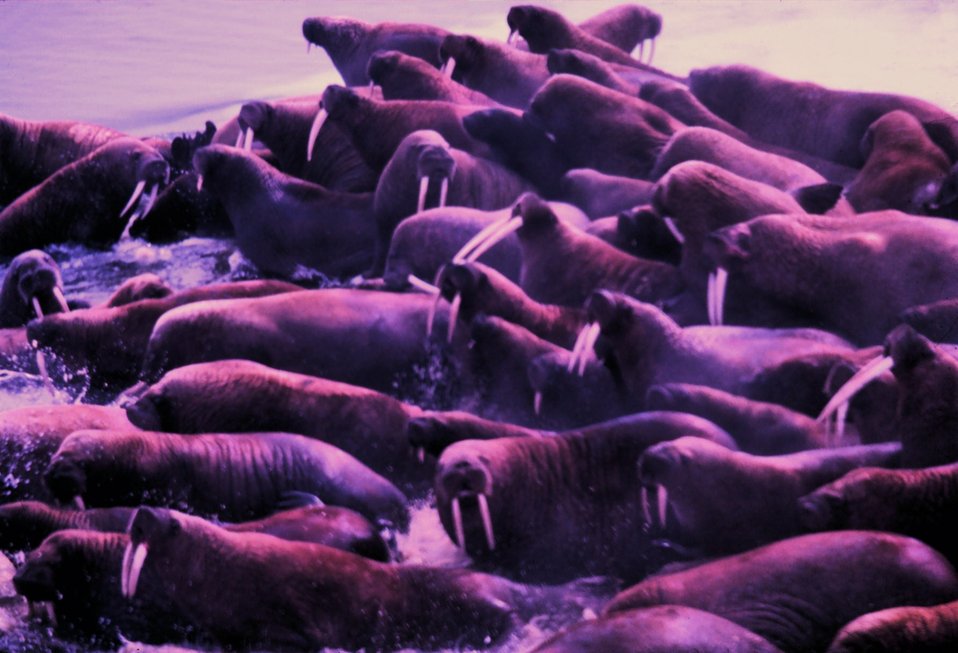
Walrus - Odobenus rosmarus divergens - on Bering Sea island.